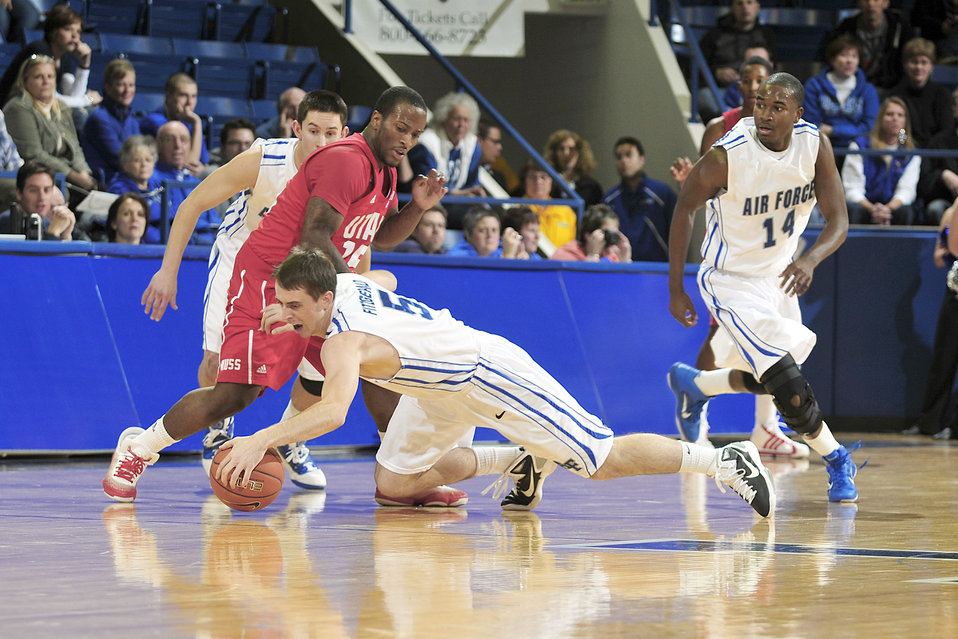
Falcons win home opener

Air Force Academy sophomore Mike Fitzgerald dives to steal the ball from Utah's Josh Watkins during the Falcons Mountain West Conference home opener Jan. 5, 2011, at the Academy's Clune Arena in Colorado Springs, Colo. The Falcons upset the Utes 77-69.